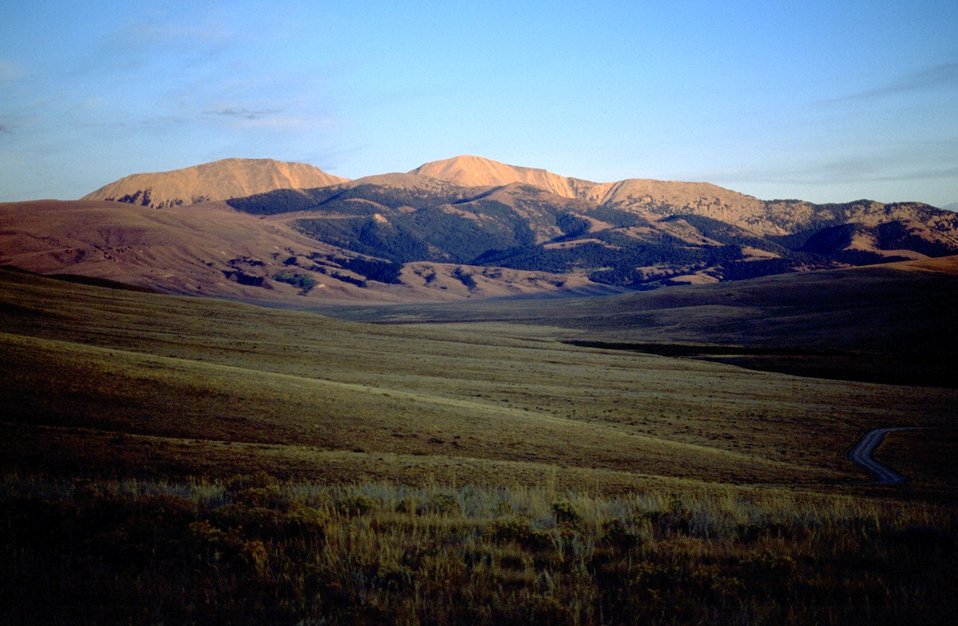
Sunset over grassy slopes with mountains in the background